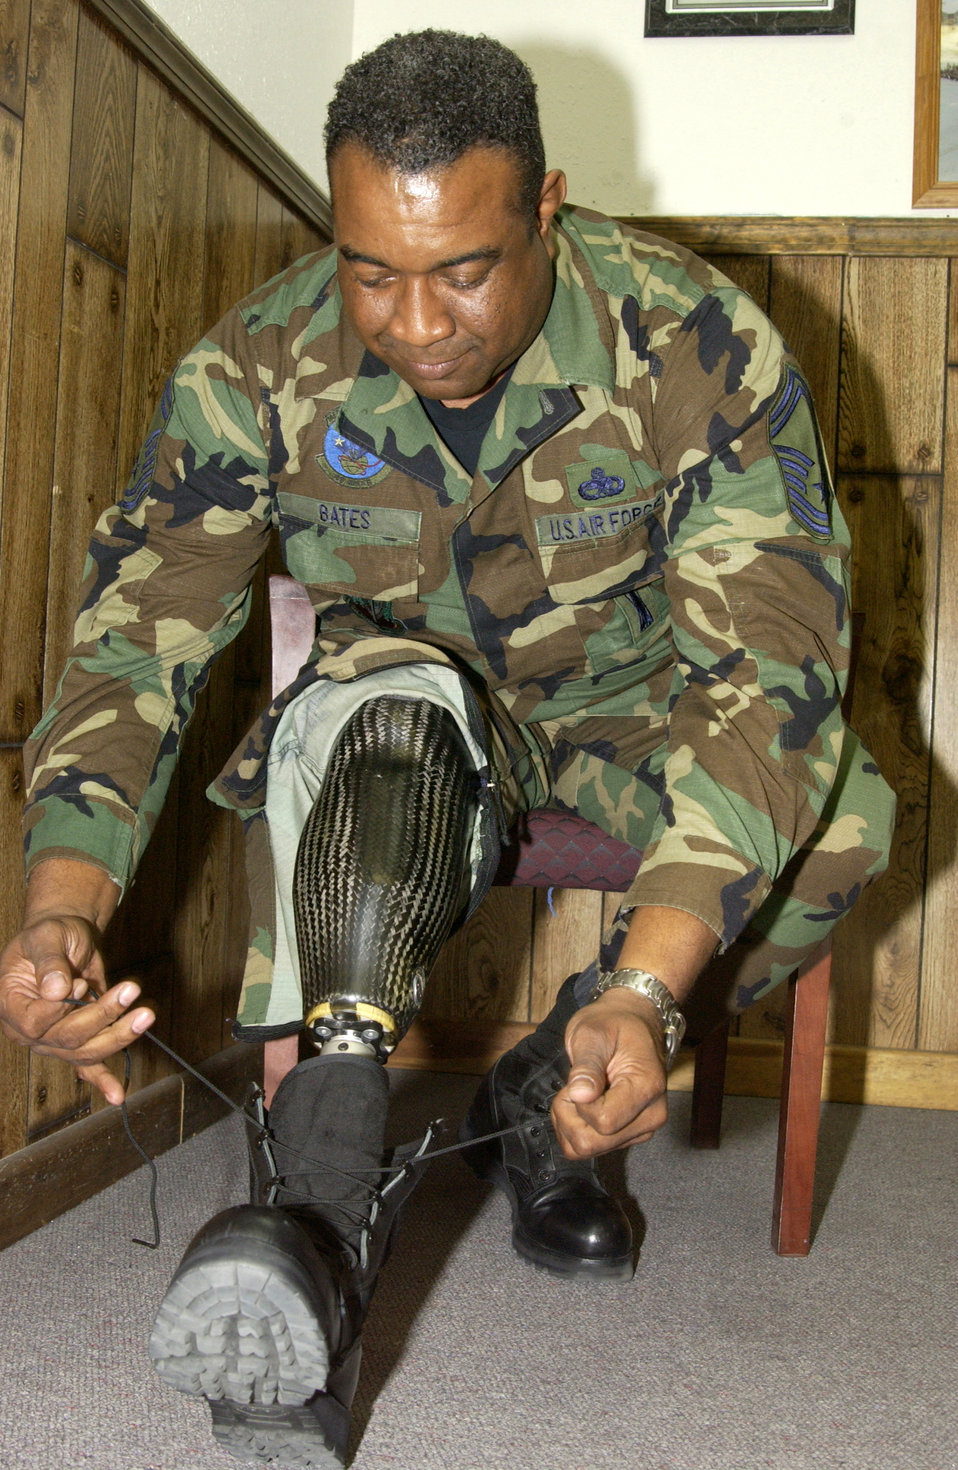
NCO loses leg, doesn't miss a step

HOLLOMAN AIR FORCE BASE, N.M. -- Senior Master Sgt. Robert Bates ties his boots on his prosthetic leg. His leg was amputated below the knee because blood clots were causing his right foot to die. He is the assistant superintendent for the 49th Aircraft Maintenance Squadron here.